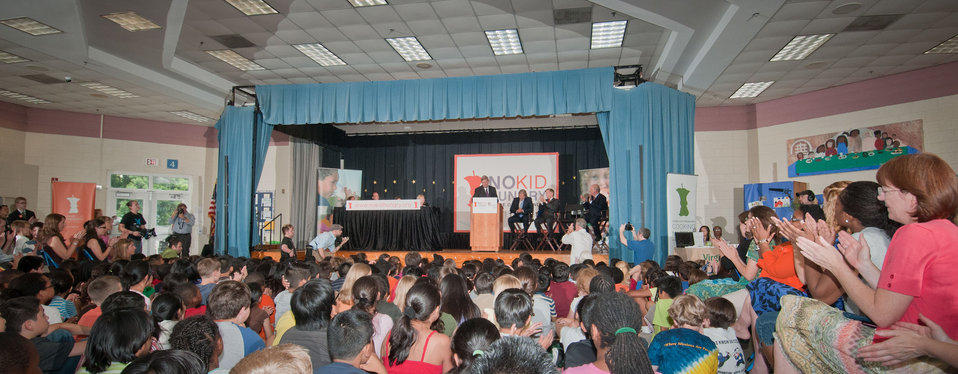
U.S. Department of Agriculture Secretary Tom Vilsack, helped launch the Virginia No Kid Hungry Campaign at Barcroft Elementary School in Arlington, VA, on Tuesday, June 7, 2011. Vilsack said, “ We know our strength comes from out partnerships…” Campaign partners include Share our Strength, the Federation of Virginia Food Banks, corporate partners, education leaders, government agencies and community organizations. The Virginia Summer Meals for Kids Program is funded by the USDA and provides free summer meals at hundreds of sites across the Commonwealth of Virginia, but according to a new report released today by the Food Research and Action Center, more than 80 percent of those eligible do not participate. Governor McDonnell announced and stressed that all parents who want free meals for their kids in need, can simply call 211 to find a summer meals site near them.